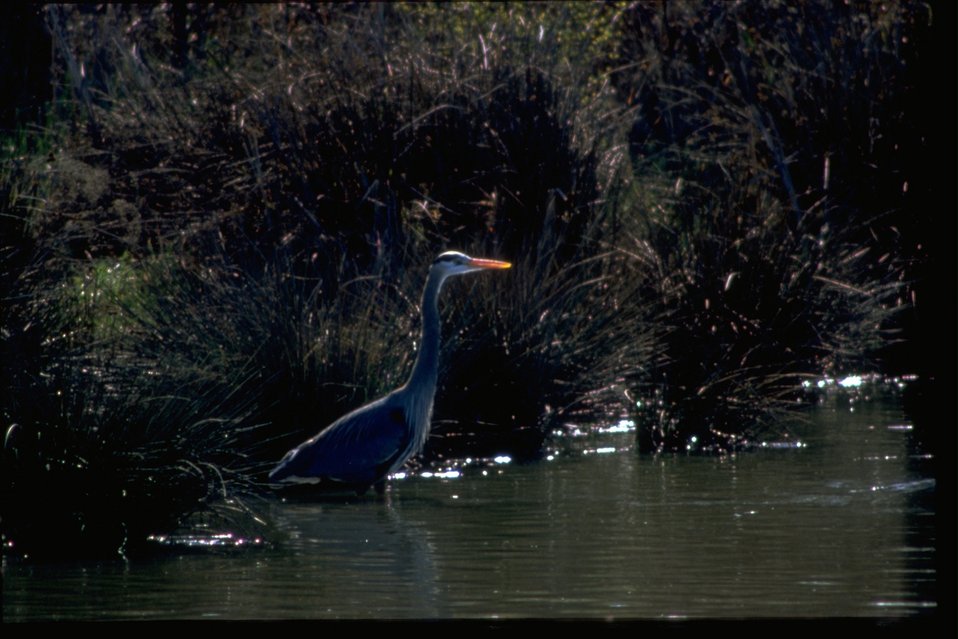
A Great Blue Heron.